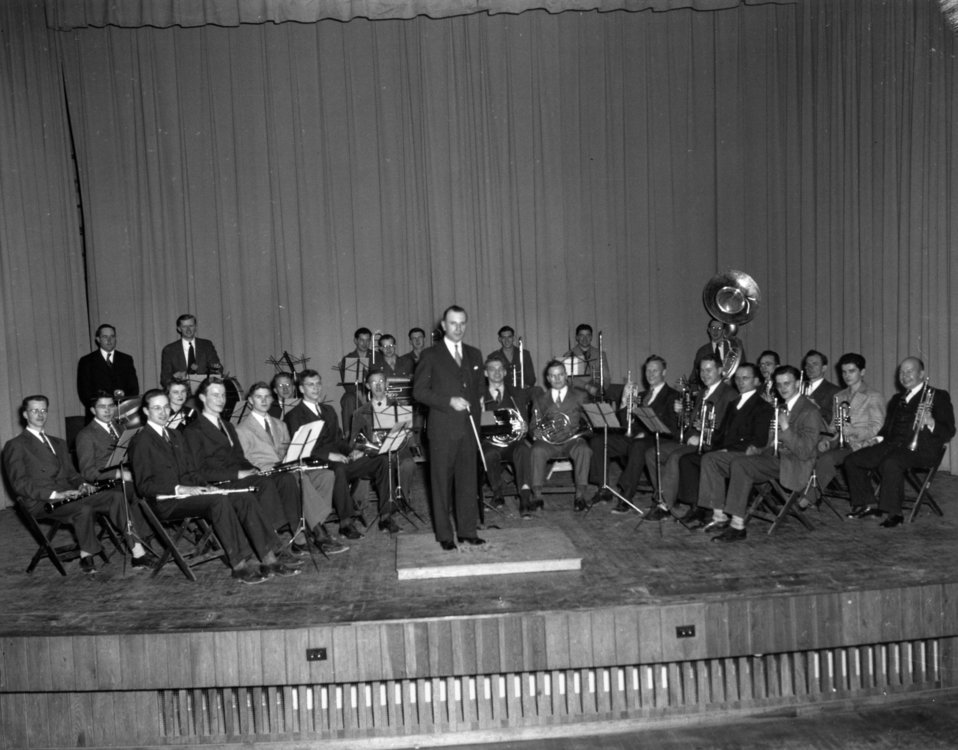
Recreation at Oak Ridge